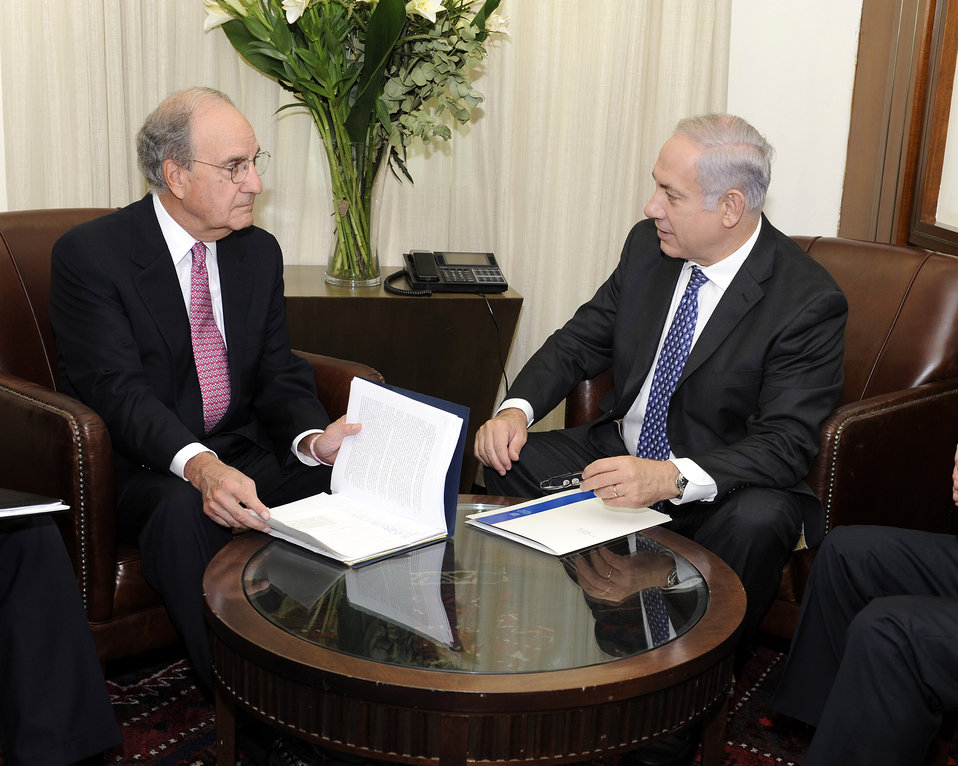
Special Envoy Mitchell Discusses Middle East Issues With Israeli Prime Minister Netanyahu

U.S. Special Envoy for Middle East Peace George J. Mitchell discusses Middle East issues with Israeli Prime Minister Benjamin Netanyahu at the Prime Minister's office in Jerusalem on October 1, 2010.